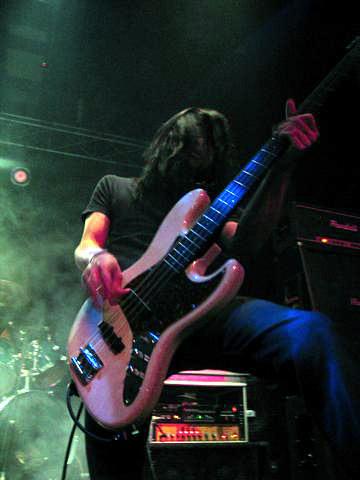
Brian Pho performing with Gammacide